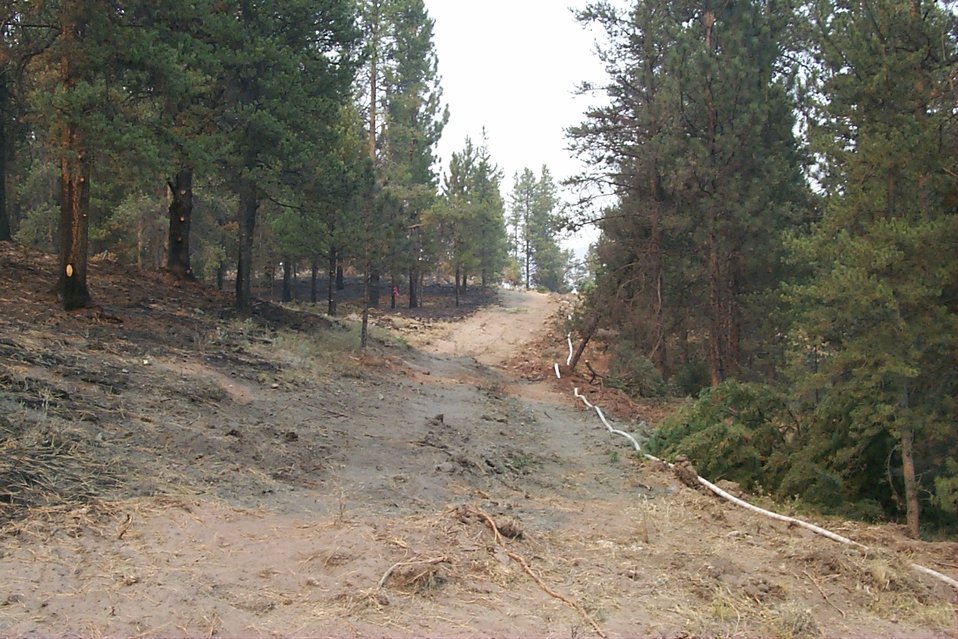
The line Burn area Fire Clearwater Fire Salmon Field Office USRD Upper Snake River District